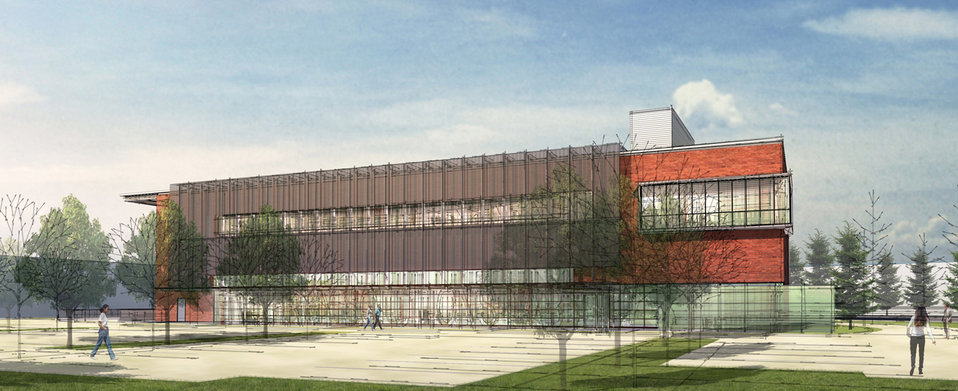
Recovery Act Grant; Georgia Institute of Technology

Rendering of the South Elevation of the Carbon-Neutral Energy Solutions Laboratory at Georgia Institute of Technology